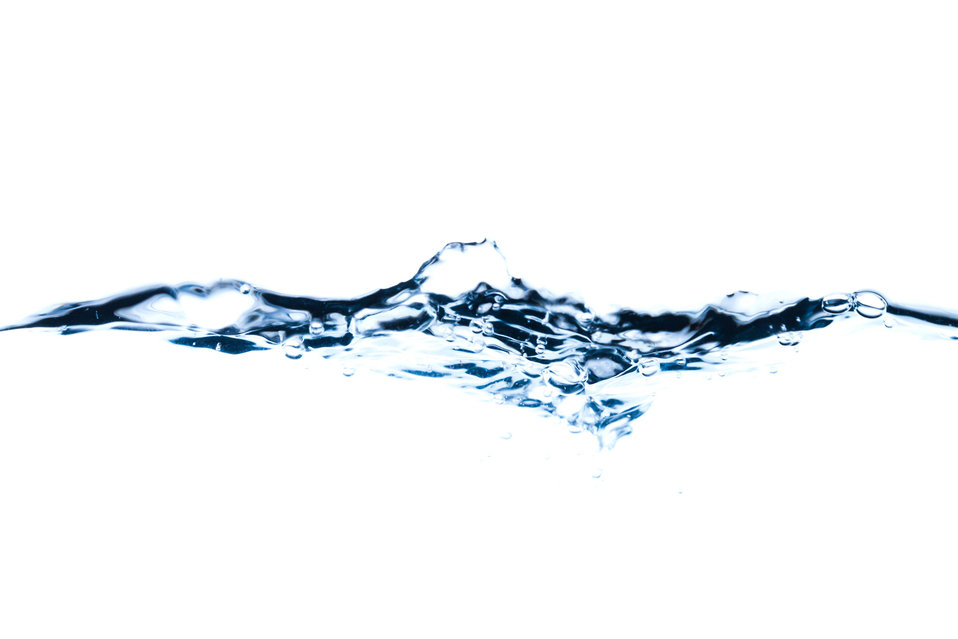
Isolated water

Water surface isolated on white background.